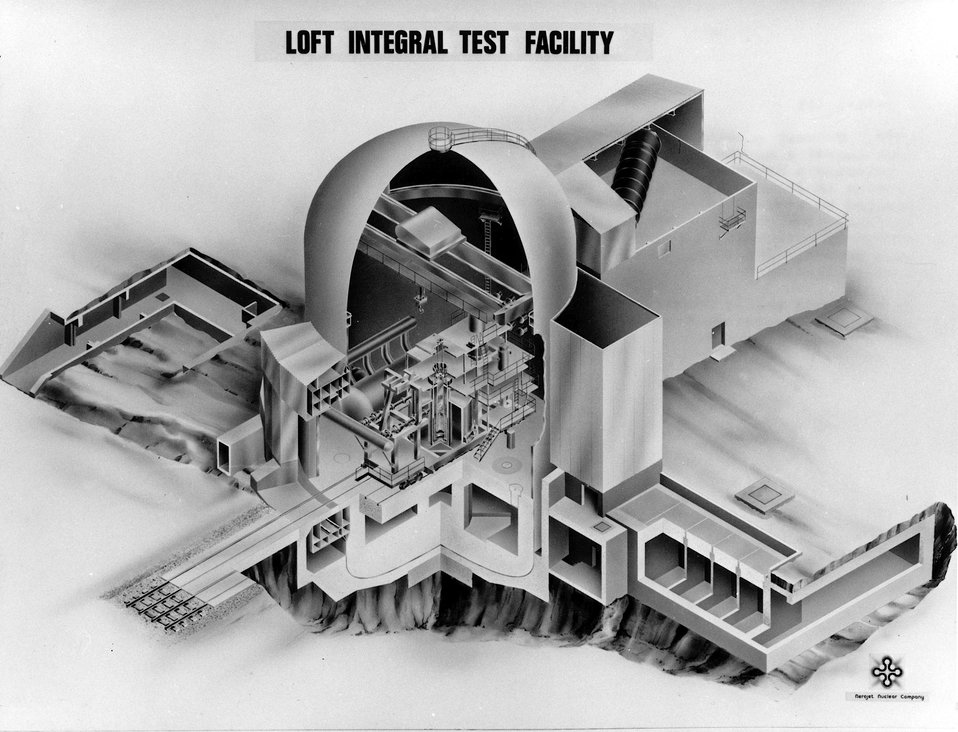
LOFT... Cutaway drawing of the Loss of Fluid Test Facility at the U.S. Atomic Energy Commission's National Reactor Testing Station in Idaho. Circa 1974.